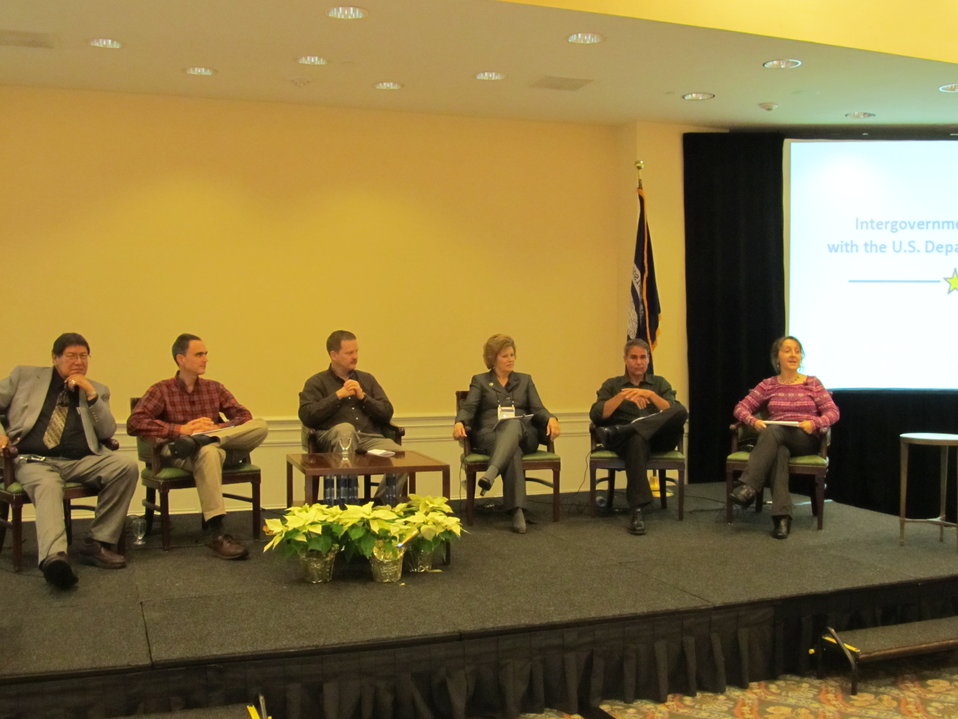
10th Intergovernmental Meeting

State, local, and Tribal officials met with DOE officials as part of the 10th Intergovernmental Meeting in New Orleans in December 2011.